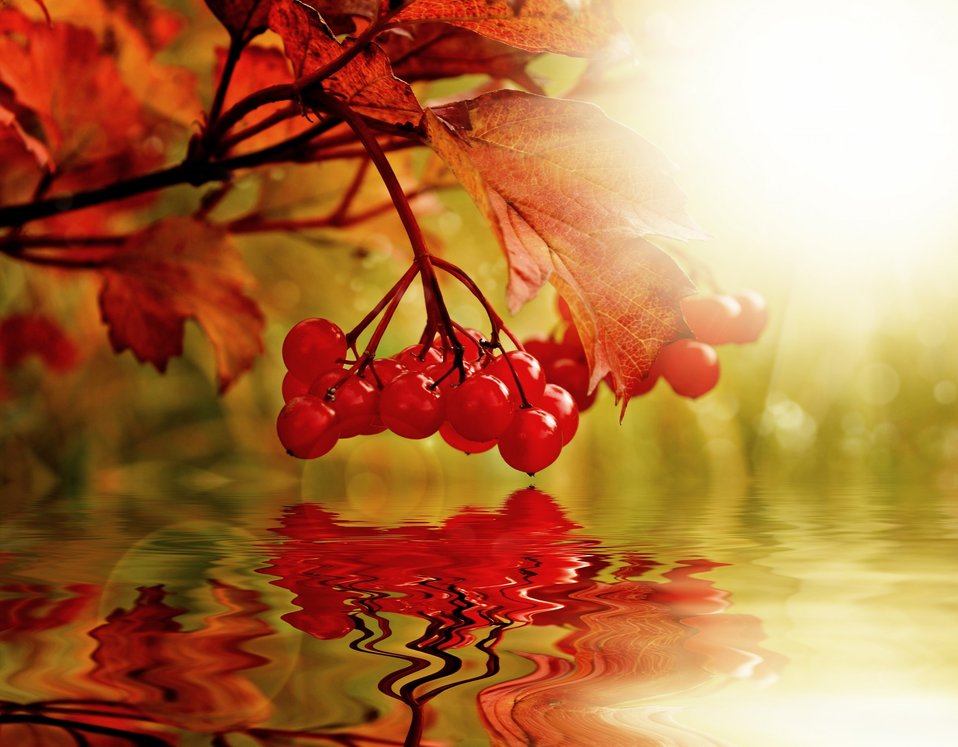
Autumn colors

Ripe berries of viburnum, reflection in water.